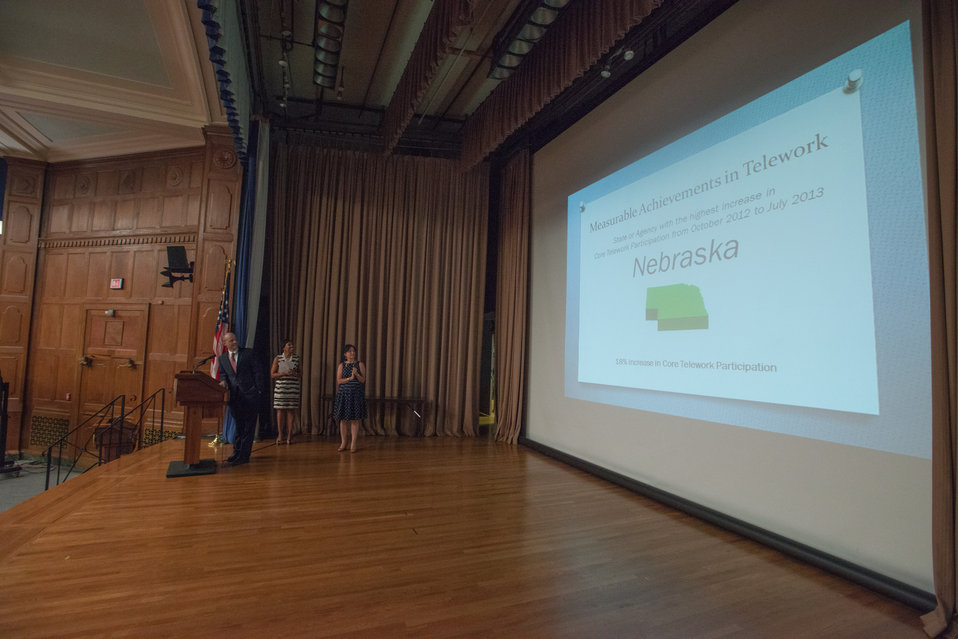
U.S. Department of Agriculture (USDA) Rural Development’s (RD) Acting Under Secretary Doug O'Brien speaks at the USDA’s RD 2nd Annual Cultural Transformation kickoff opening ceremony and forums, themed “Employees Influencing Change,” on Tuesday, Aug. 13, 2013 USDA in Washington, D.C.